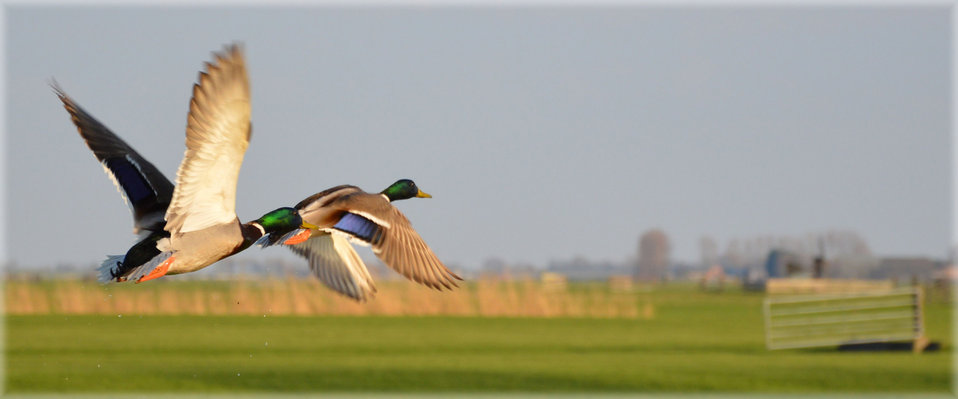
Flying ducks

Ducks flying above grassland.